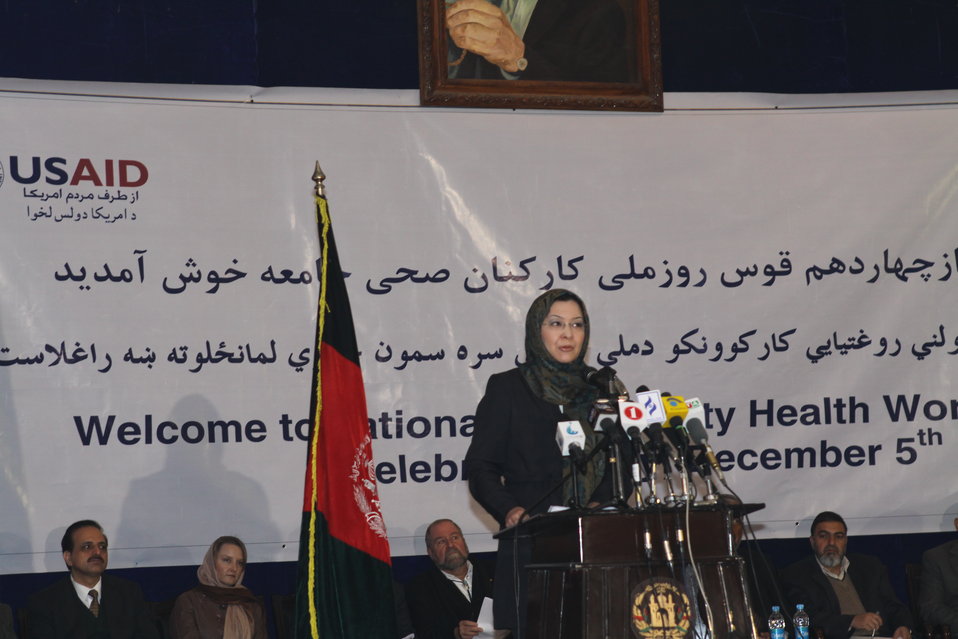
Community Health Workers Celebrated

Kabul, Afghanistan | December 5, 2010 — In support of the United Nations designated International Volunteer Day for Economic and Social Development, Afghanistan’s Ministry of Public Health celebrated its annual Community Health Worker Day today. Acting Minister of Public Health Dr. Suraya Dalil, USAID Senior Deputy Mission Director Robert Hellyer, other government officials, and international donors joined in recognizing the critical contribution of community health workers in Afghanistan and encouraging them to continue their voluntary support to their communities.
The event praised the contributions of the more than 22,000 volunteers throughout the country who deliver community level health-education, counseling, and services out of village health posts located in private homes. The Ministry of Public Health envisioned that community-based healthcare programs will actively encourage communities and families to adopt healthy lifestyles and behaviors, and provide families access to high quality and socially acceptable preventative medicine and life-saving services.
“We have 22,000 community health workers in Afghanistan that are able to implement the basic and standard medicines. They all have been trained through a job description,” said Minister Dalil. Addressing the health workers, she added, “I am proud and feel powerful that I have people like you.”
USAID-funded health projects collaborate closely with the Ministry of Public Health to improve the health and nutritional status of Afghans, provide quality primary healthcare, and promote healthy behaviors at the community and household-levels. USAID supported the training of more than 9,000 of the volunteer community health workers currently working in Afghanistan.
“On behalf of the American people, I congratulate the Community Health Workers for their diligence to gain the skills and knowledge necessary to serve their communities in this important role,” said USAID Senior Deputy Mission Director Hellyer. “USAID strongly supports community based health care and believes that quality community-based health services are essential to reaching Afghanistan’s Millennium Development Goals.”
To support the Basic Package of Health Services, USAID assisted in developing the community health worker training manual, helped train community health worker supervisors and master-trainers, facilitated in-service training, and produced and developed reporting tools, job aids, and education materials.